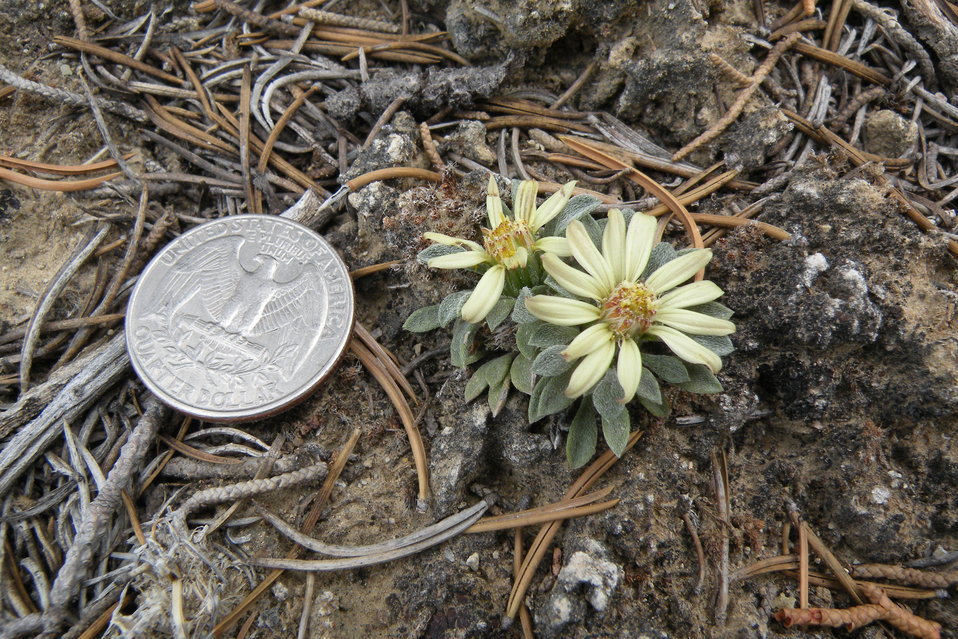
Last Chance townsendia (Townsendia aprica) is a diminutive perennial herb in the sunflower family. It is endemic to central Utah where it occurs in Emery, Sevier, and Wayne counties. The species is associated with piñon-juniper and grassland communities between 6,100 and 8,000 feet in elevation. Habitat loss, degradation, and fragmentation are the largest threats this species faces today. Sources of these threats include coal mining, road developments, recreational off-road vehicle use, and grazing. It was listed threatened in 1985.